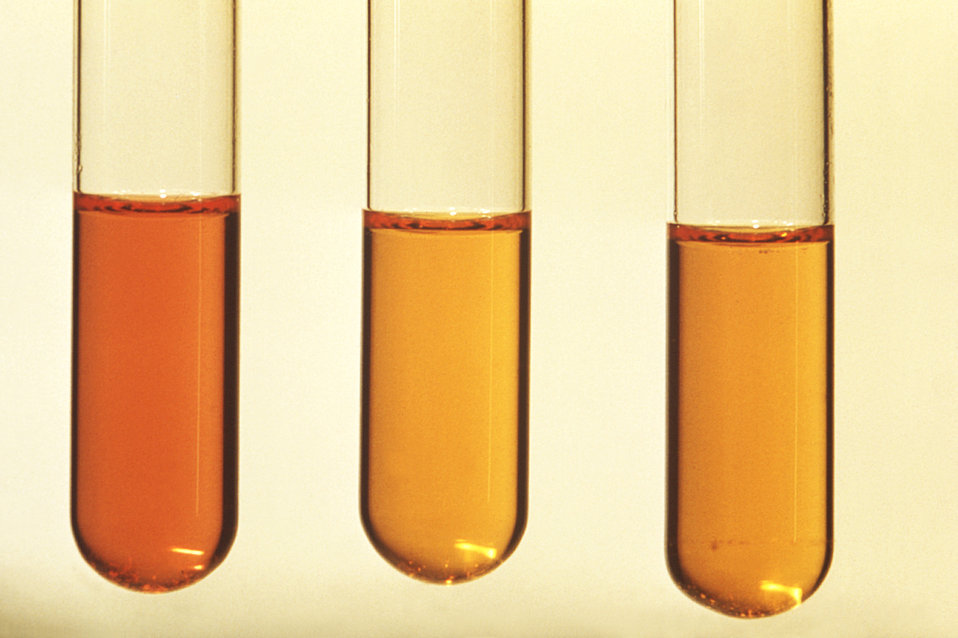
This image depicts three test tubes filled with a urea broth. The tube on the left, and the tube on the right included an inoculum containing Actinomycetes organisms. The middle tube was uninoculated, and therefore, remains yellow in color, while the tube on the left proved positive, exhibiting a reddish-orange color.